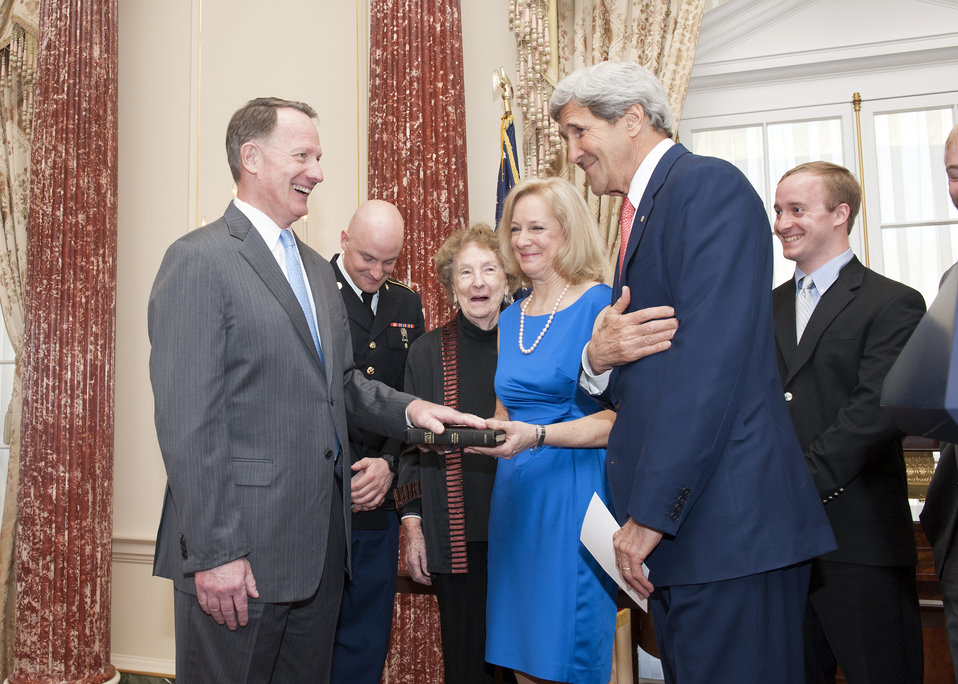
Secretary Kerry Shares a Laugh With Assistant Secretary Smith

U.S. Secretary of State John Kerry shares a laugh with Daniel Smith and his family after swearing him in as the Assistant Secretary of State for Intelligence and Research at the U.S. Department of State in Washington, D.C., on April 24, 2014.